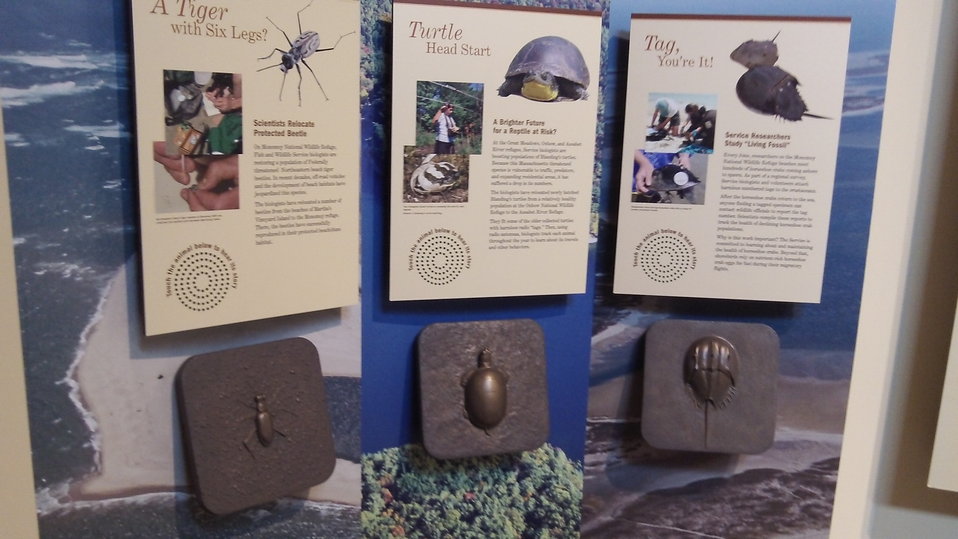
Assabet River National Wildlife Refuge

Informational posters at the Visitor's Center of the Assabet River National Wildlife Refuge, Sudbury, MA.